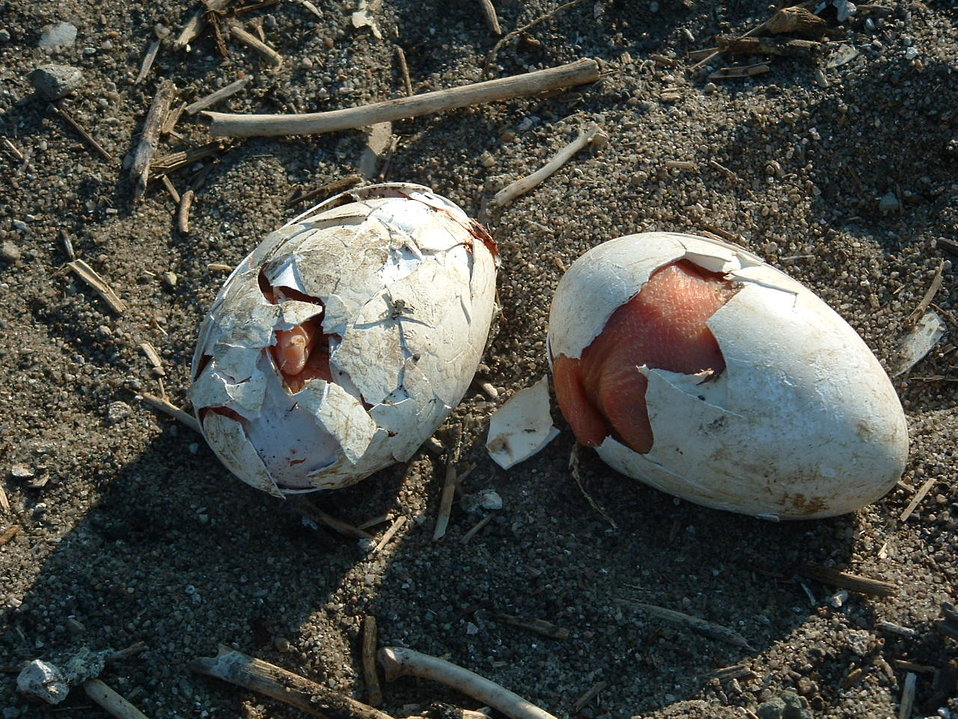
Hard Work

American white pelican chicks start hatching at the Bitter Lake nesting colony in Day County, Waubay Wetland Management District, South Dakota.